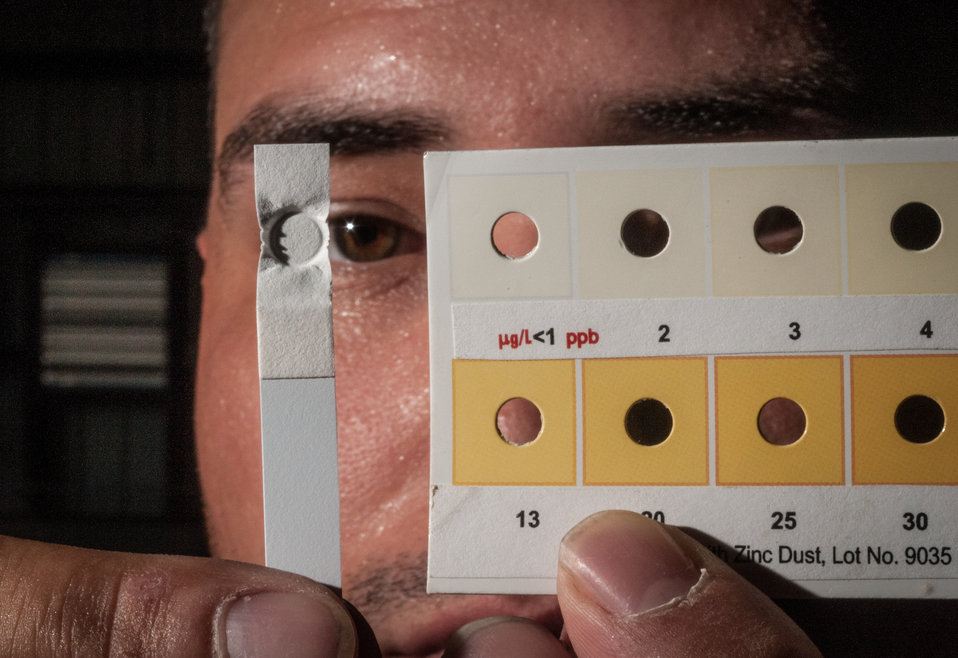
Freer Water Control and Improvement District (FWCID) employee Anthony Arredondo holds a test strip to a comparison chart showing the tested water is less than one part per billion of arsenic, thanks to financial assistance of the U.S. Department of Agriculture (USDA) Rural Development (RD).

Freer Water Control and Improvement District (FWCID) benefits from the financial assistance of the U.S. Department of Agriculture (USDA) Rural Development (RD) to complete a two-phase approach to meeting the city’s water supply and safety needs, on Tuesday, June 18, 2013. Although, the naturally occurring arsenic levels have remained constant for more than a century, the Environmental Protection Agency (EPA) safe level standards have established lower levels of arsenic to be safe for human consumption. To meet those levels FWCID approached USDA and was awarded a $986,000 loan for Phase I, to install two new water wells, each rated at 167 gallons per minute (creating a total of eight wells); 13,600 feet of well collection lines; and 15,000 linear feet of well control line to remotely control the well pumps and the 1,000,000 gallon holding tank at the well facility, which supplies water to the new Arsenic Removal System (Phase II). Previously, water was manually controlled by personnel who knew when and how long to manually opened and closed water valves or started well pumps to ensure holding tank levels were within operating levels during peek and slack times of the day. Phase II was a combination of a $1,832,000 loan and a $1,258,750 grant, which provided for the customized arsenic removal system, seen in these photos. The system includes a new 3,530 sp. ft. facility, on a .76-acre site, and houses the operations room, computer and power system, laboratory room, and pump systems. The entire operation can be monitored through a desktop computer interface system. The computer-controlled system ensures raw water is fed to the arsenic removal pump system, which works in sequence to maintain a constant pressure, when needed, to pump water through (blue) arsenic removal absorber vessels, and into ground storage tanks that feeds the residential and commercial needs of the city. Samples of water are periodically tested; and so far the arsenic levels have been below 1 part per billion (PPB), well under the 10 PPB limit.